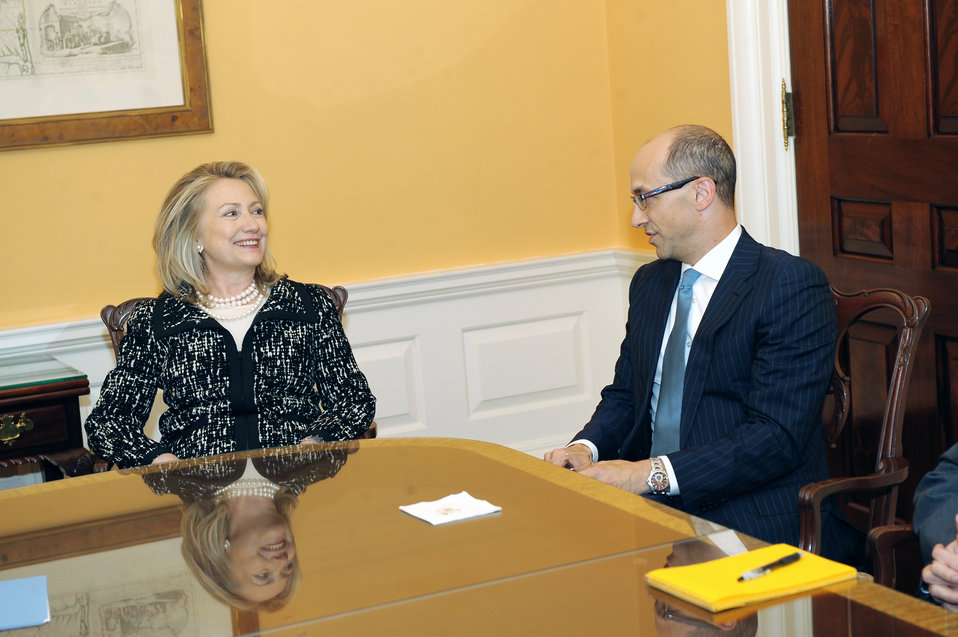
Secretary Clinton Meets With Twitter CEO Costolo

U.S. Secretary of State Hillary Rodham Clinton meets with Dick Costolo, CEO at Twitter, at the U.S. Department of State in Washington, D.C., April 27, 2012.